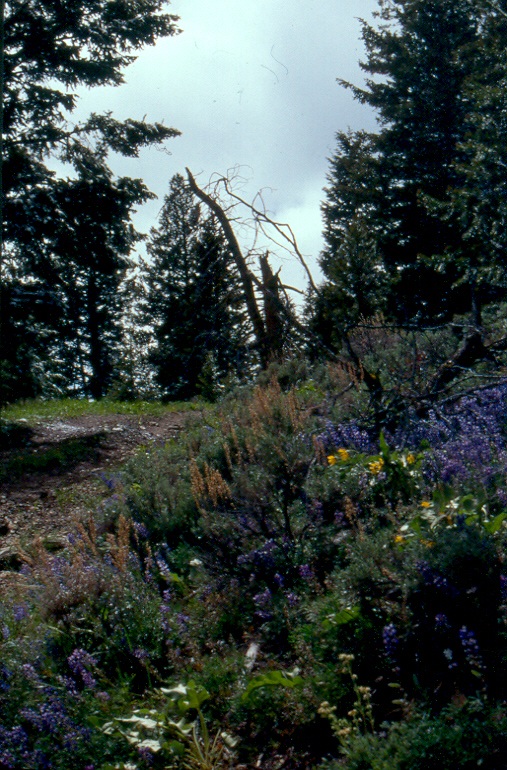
Recreation Site Salmon Field Office UCSC Upper Columbia Salmon Clearwater District